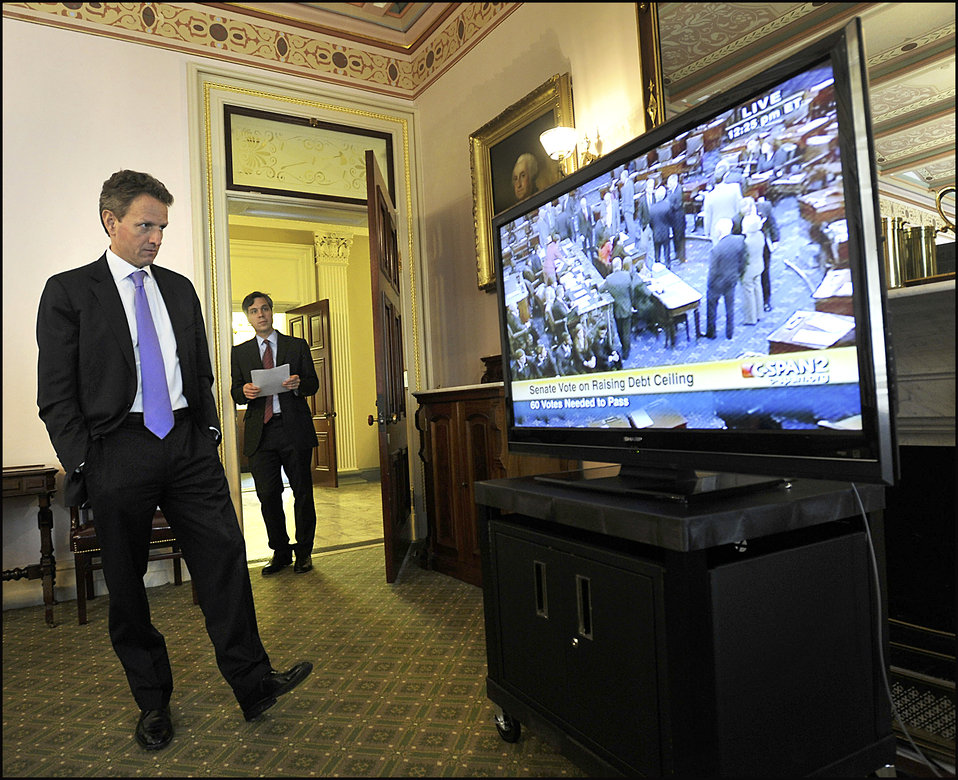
Behind the Scenes: Debt Limit

Treasury Secretary Tim Geithner and staff watch the Senate vote to raise the debt limit on Tuesday, August 2, 2011.